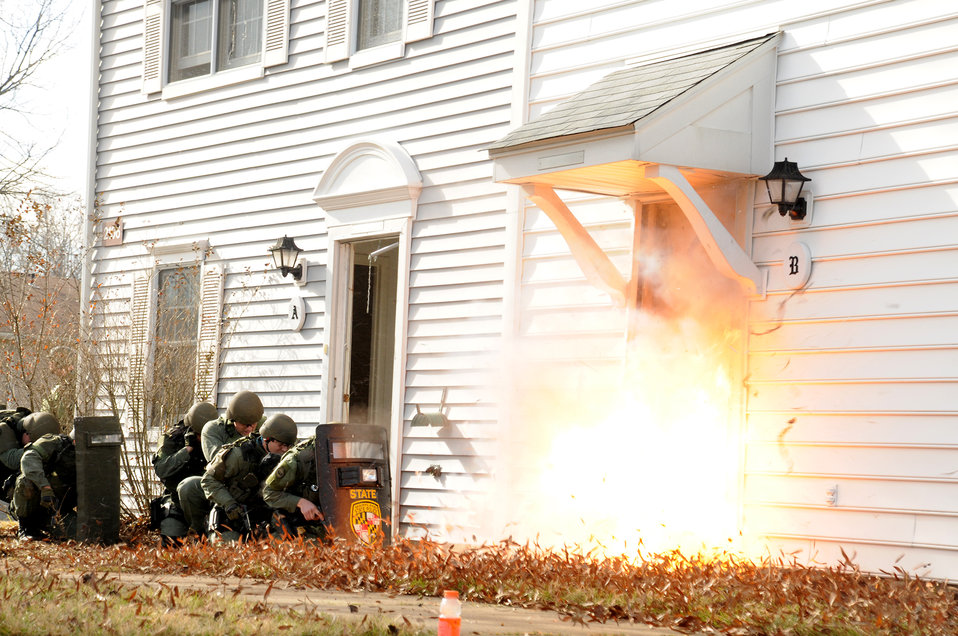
JB Andrews Airmen train with state special tactical assault team

Members of the Maryland State Police Special Tactical Assault Team Element conduct a training exercise with 316th Security Forces Squadron members Jan. 19, 2010, at Joint Base Andrews, Md. The joint exercise, held in unusable base housing, is a means for the the 316th SFS and MDSP forces to pool experience, materials and other training techniques. The doorway explosion is the result of a simulated forced entry in the event armed inhabitants refused police access.